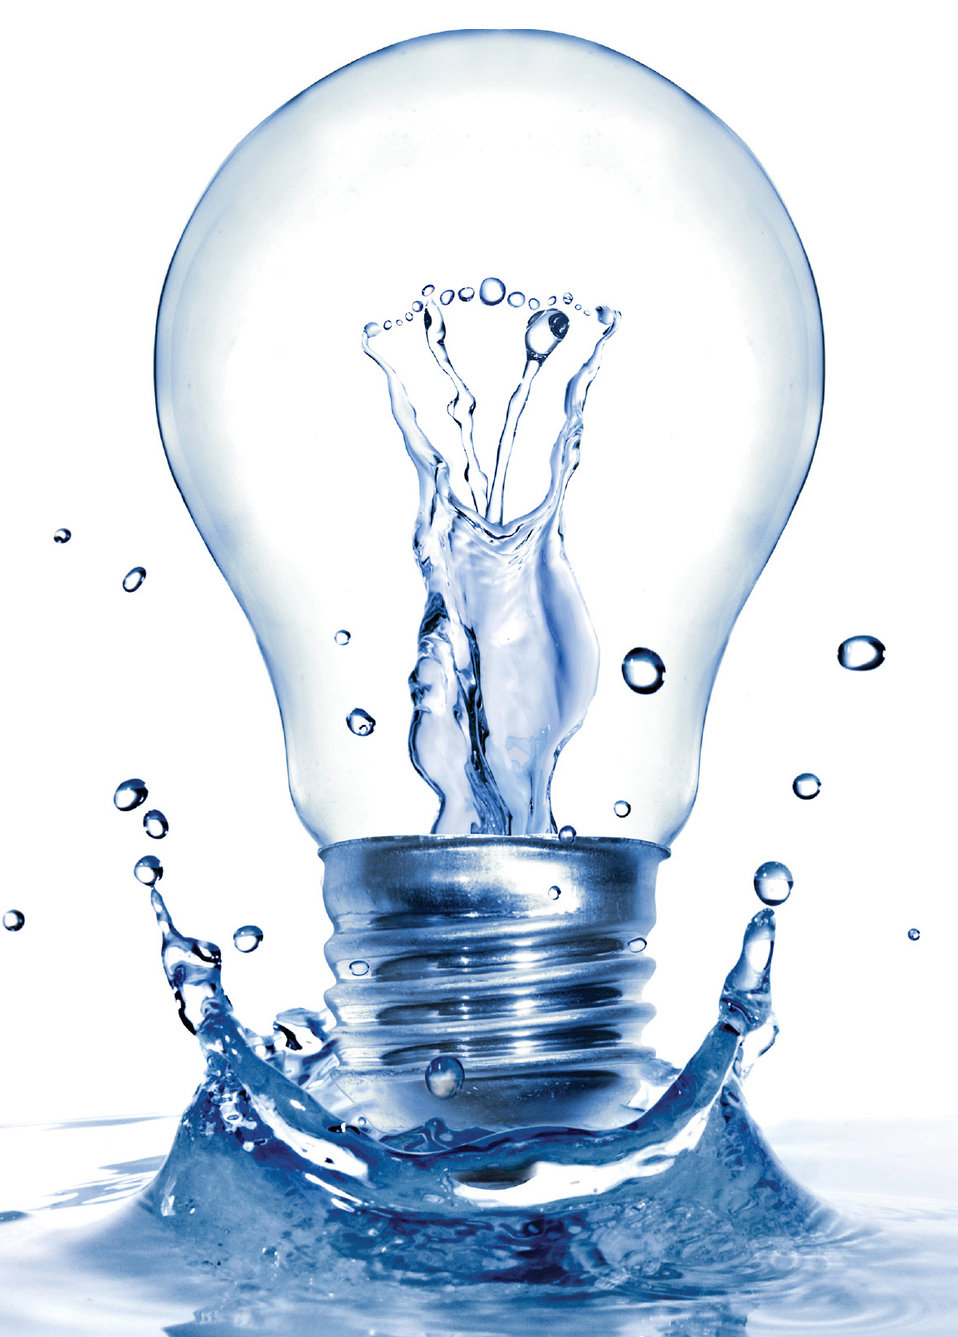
Energy and water are each needed to produce and distribute the other, and Argonne scientists are searching for methods to get more from less.